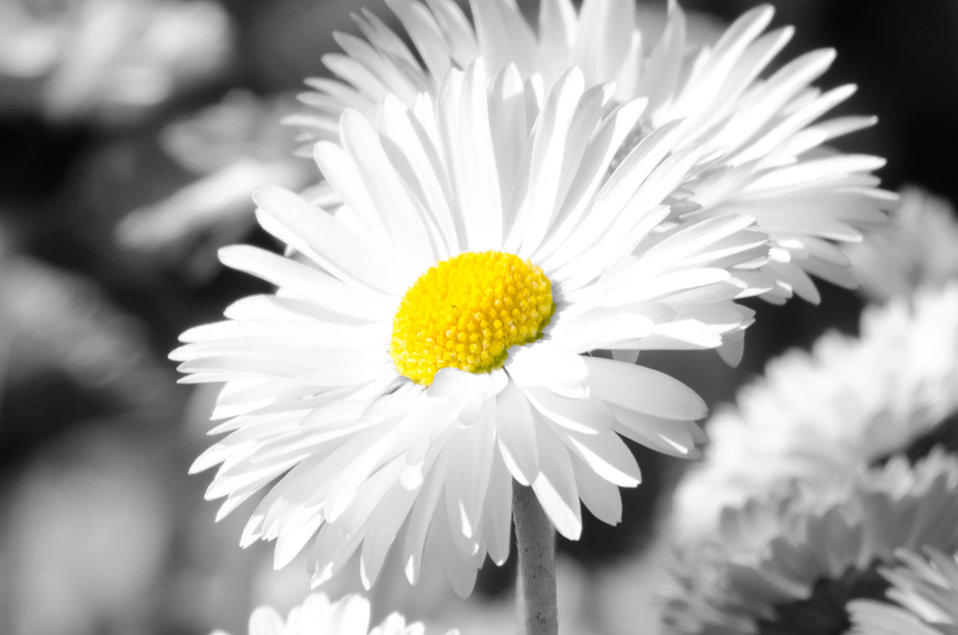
Flower - macro.